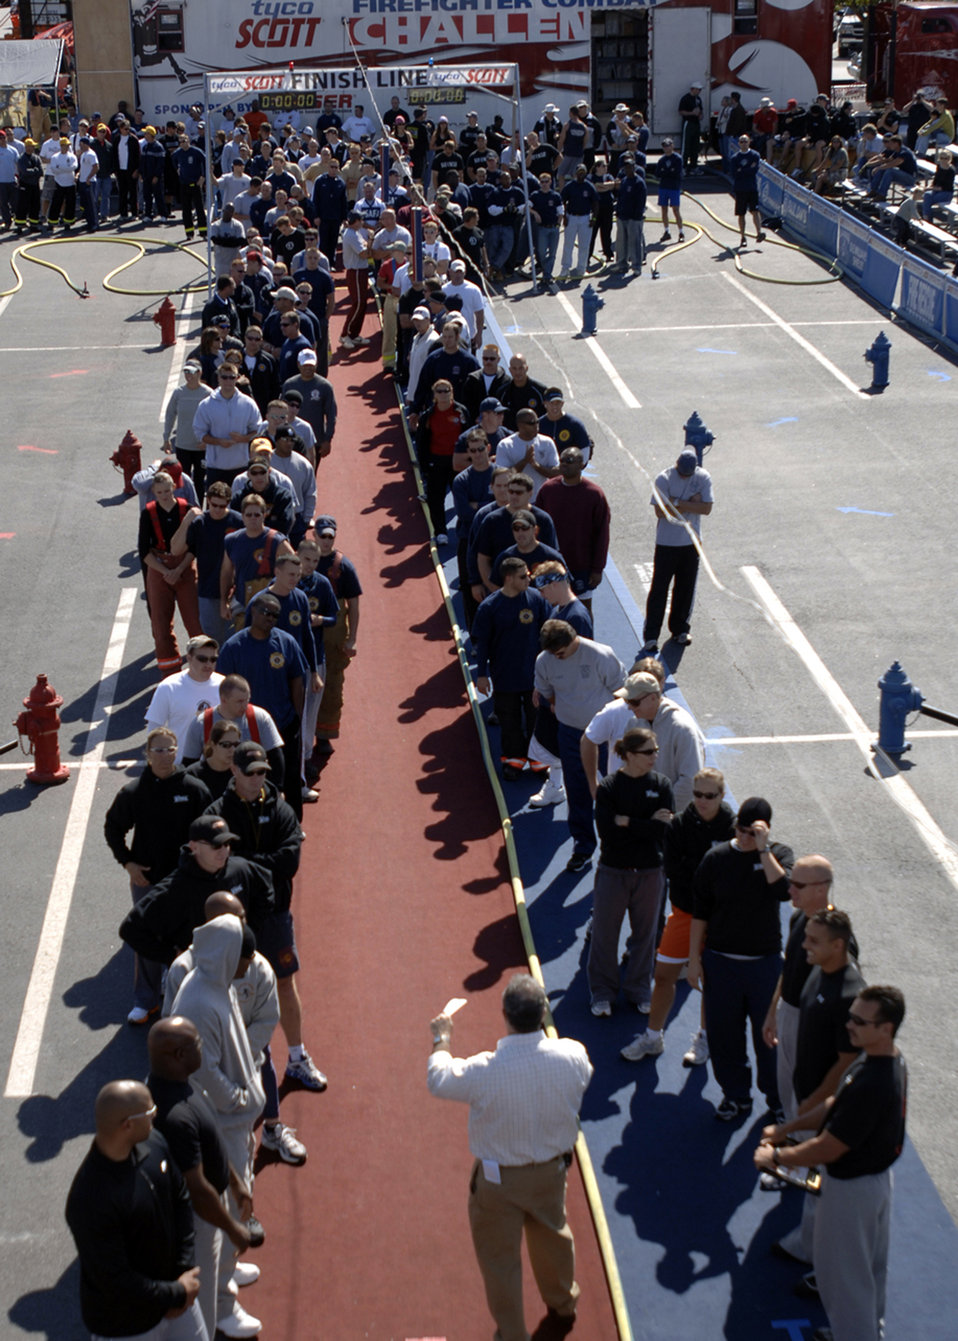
Opening Ceremony

Participants line up for the opening ceremony during the second day of the Firefighter Combat Competition at Morrow, Ga., Oct. 13, 2006. It is a national competition with over 450 firefighters from around the U.S.